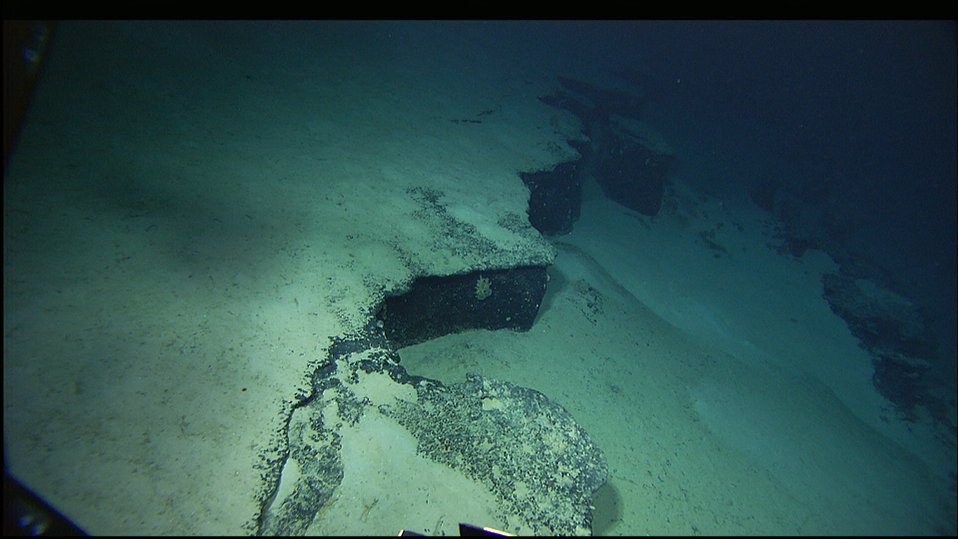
A small vertical ledge